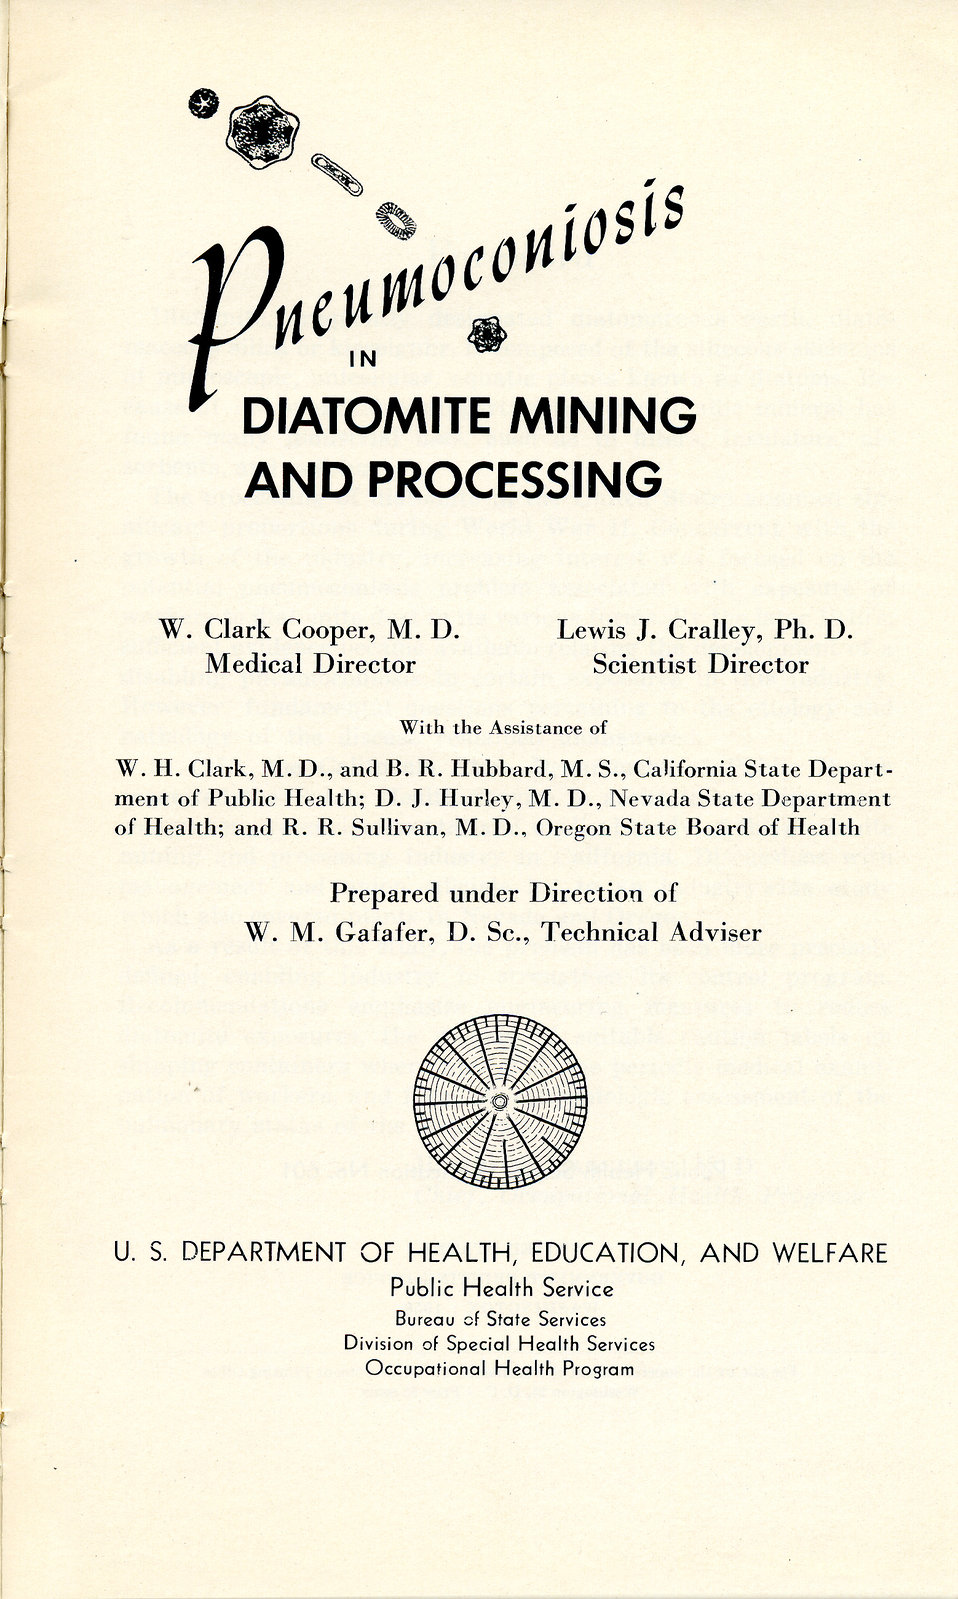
From 1958, this historical image was provided by the Center for Disease Control's (CDC), National Institute for Occupational Safety and Health (NIOSH). The design of this U.S. Public Health Service Publication (USPHS) title page, No. 601, entitled, 'Pneumoconiosis in Diatomite Mining and Processing', published that year, depicted just a few of the many forms in which diatoms may be found. The publication featured the results of the 1953-1956 USPHS study of miners' who'd been exposed to airborne particulates in diatomaceous earth mining and processing plants, and the resultant negative health consequences including respiratory, ocular, and dermal disorders. The study cohort involved participants from three different western states.